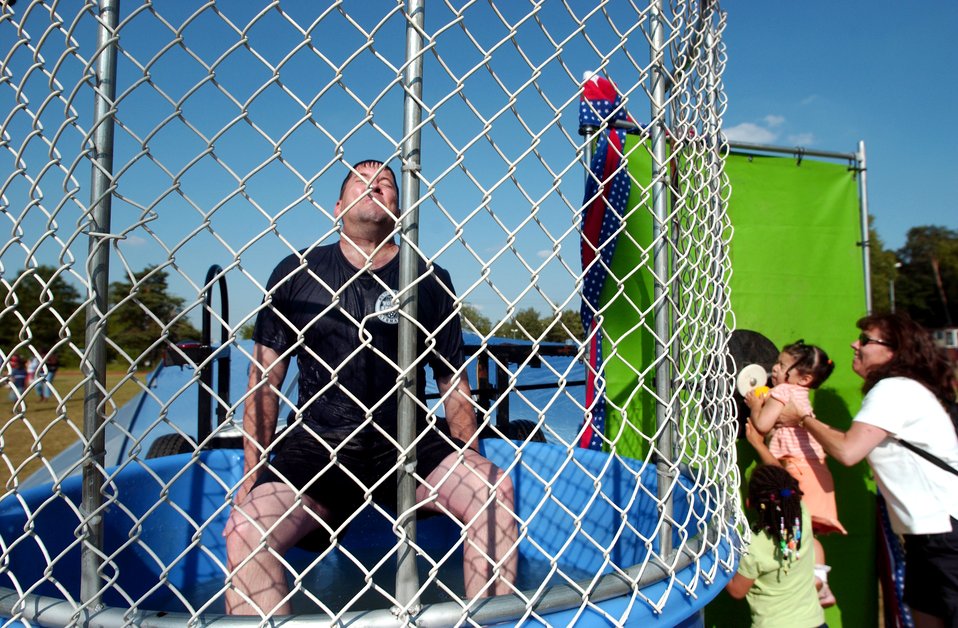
Hometown crowd roots for U.S.A.

Tech. Sgt. William Kelso braces to get dunked by 2-year-old Mya Talbert at the World Cup Fest at Pulaski Park in Kaiserslautern, Germany, on Saturday, June 17. She is held by her mom, Master Sgt. Suzanne Talbert, from the 723rd Air Mobility Squadron at Ramstein Air Base, and encouraged by her sister, 5-year-old Rene. Sergeant Kelso is assigned to Headquarters U.S. Air Forces in Europe.